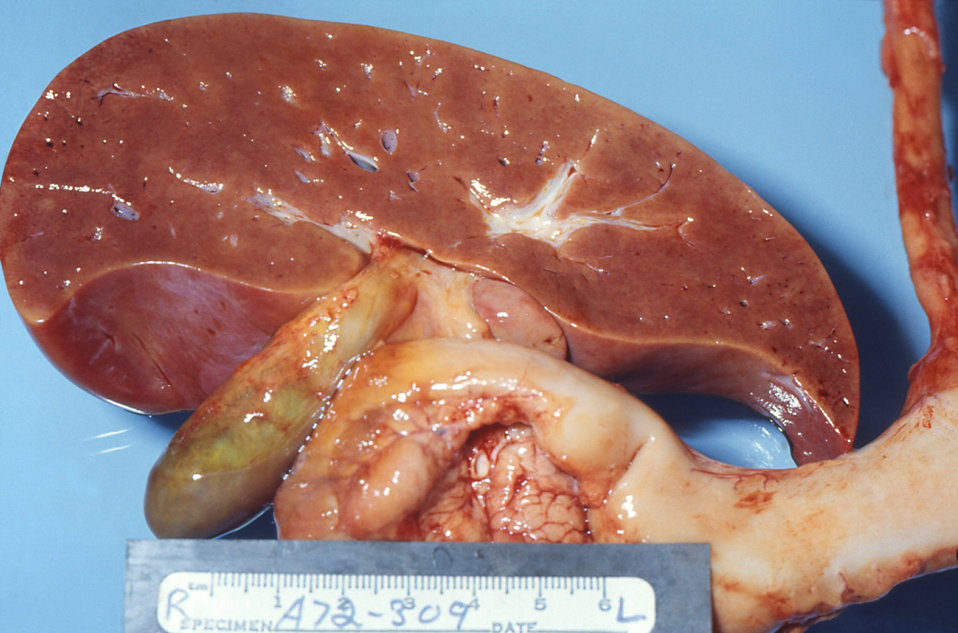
Gross pathology of liver in fatal Reye's syndrome